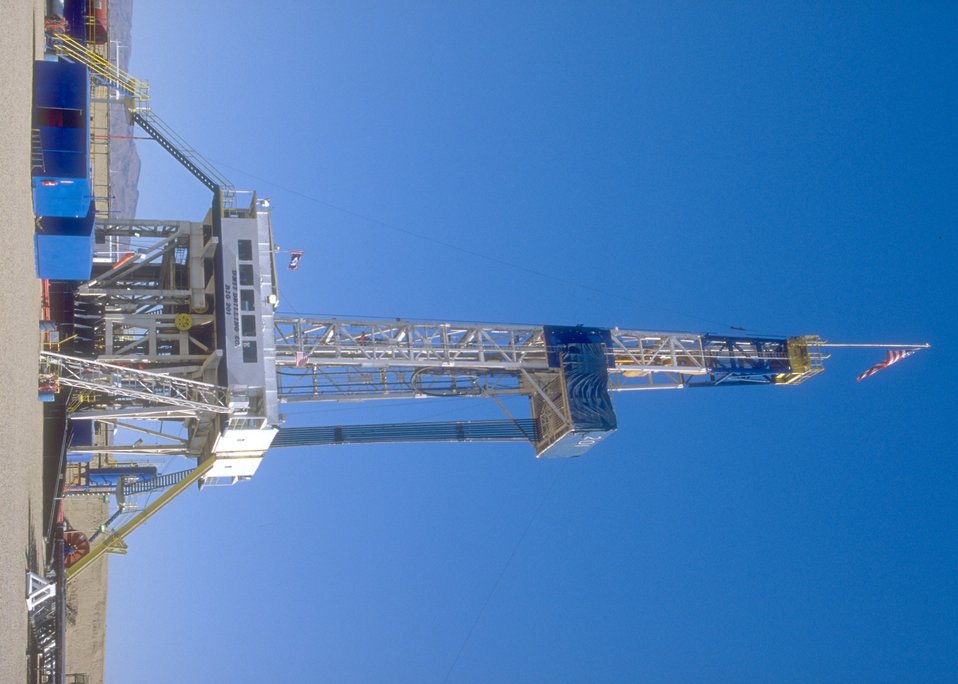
Burlington Northern deep well rig, Casper Field Office.